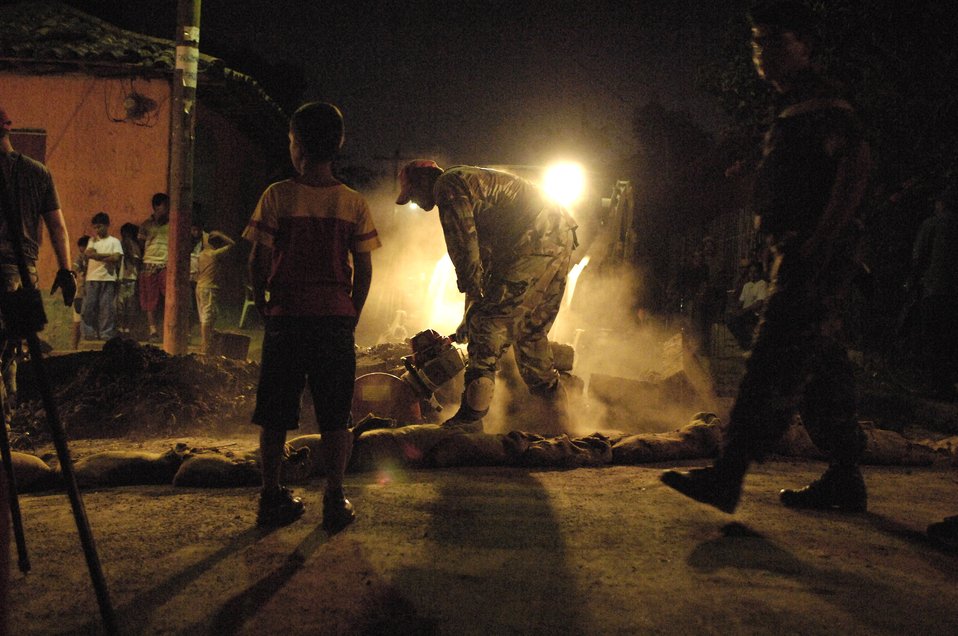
New Horizons-Nicaragua 2007

Staff Sgt. Brian Vaden cuts through the surface of an old road March 2 in Santa Teresa, Nicaragua, in preparation to replace the roadway. The effort was part of New Horizons-Nicaragua 2007, a $7.25 million joint U.S. and Nicaraguan military humanitarian and training exercise, providing a new school and medical clinic, as well as free health and veterinary care, giving aid and strengthening bonds between the two nations. Sergeant Vaden is deployed with 820th Expeditionary Red Horse Squadron.